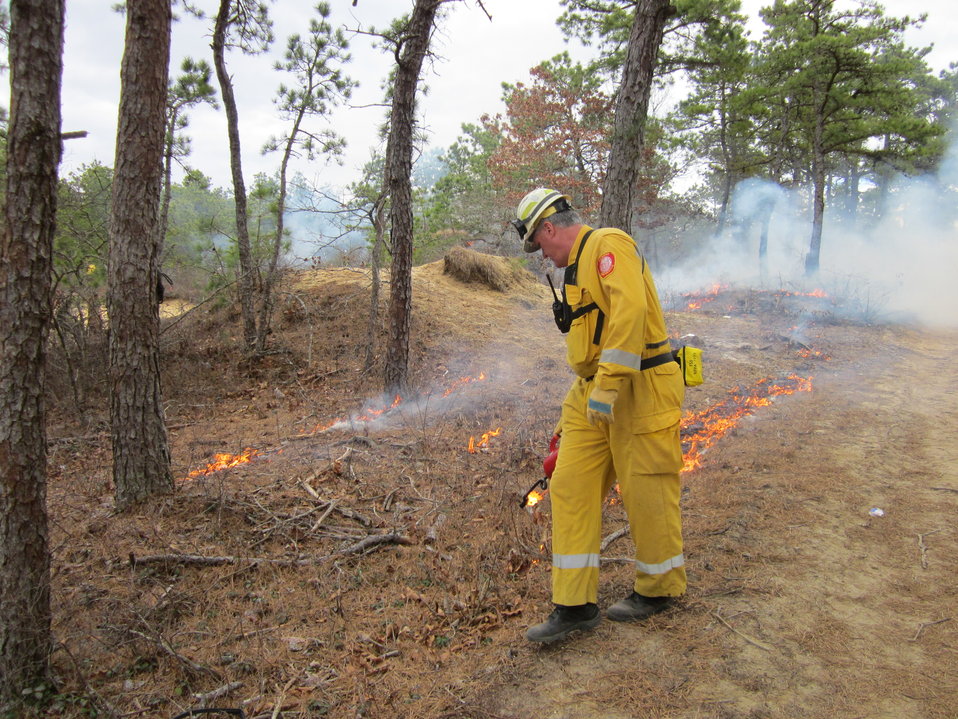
Chief Baker Lights Controlled Burn

Mashpee, Massachusetts, April 5, 2012. George Baker, Chief of the Town of Mashpee, Massachusetts Fire Department, uses a drip torch to light the south end of a controlled burn at the Town of Mashpee Holland Hill Barrens area of Mashpee National Wildlife Refuge. The chief wears lightweight fire-resistant fire gear for work in the woods and carries a protective fire shelter on his belt. The burn reduced fire risk to neighboring homes and improved habitat for the New England cottontail. It was conducted by the Town of Mashpee, U.S. Fish and Wildlife Service, State of Massachusetts Department of Conservation and Recreation, and Northeast Forest and Fire Management.